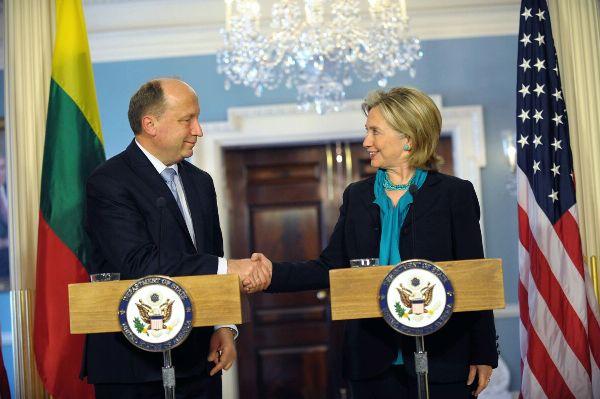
Secretary Clinton Shakes Hands With Lithuanian Prime Minister Kubilius

U.S. Secretary of State Hillary Rodham Clinton shakes hands with Lithuanian Prime Minister Kubilius during a press availability after their bilateral meeting in the Treaty Room at the U.S. Department of State, Washington, DC, May 6, 2010.